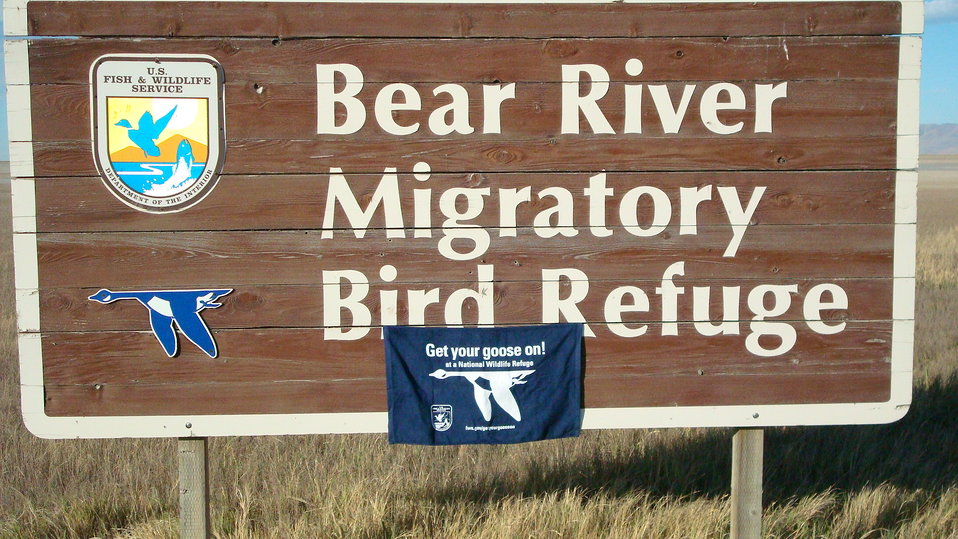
GYGO! - Bear River Style